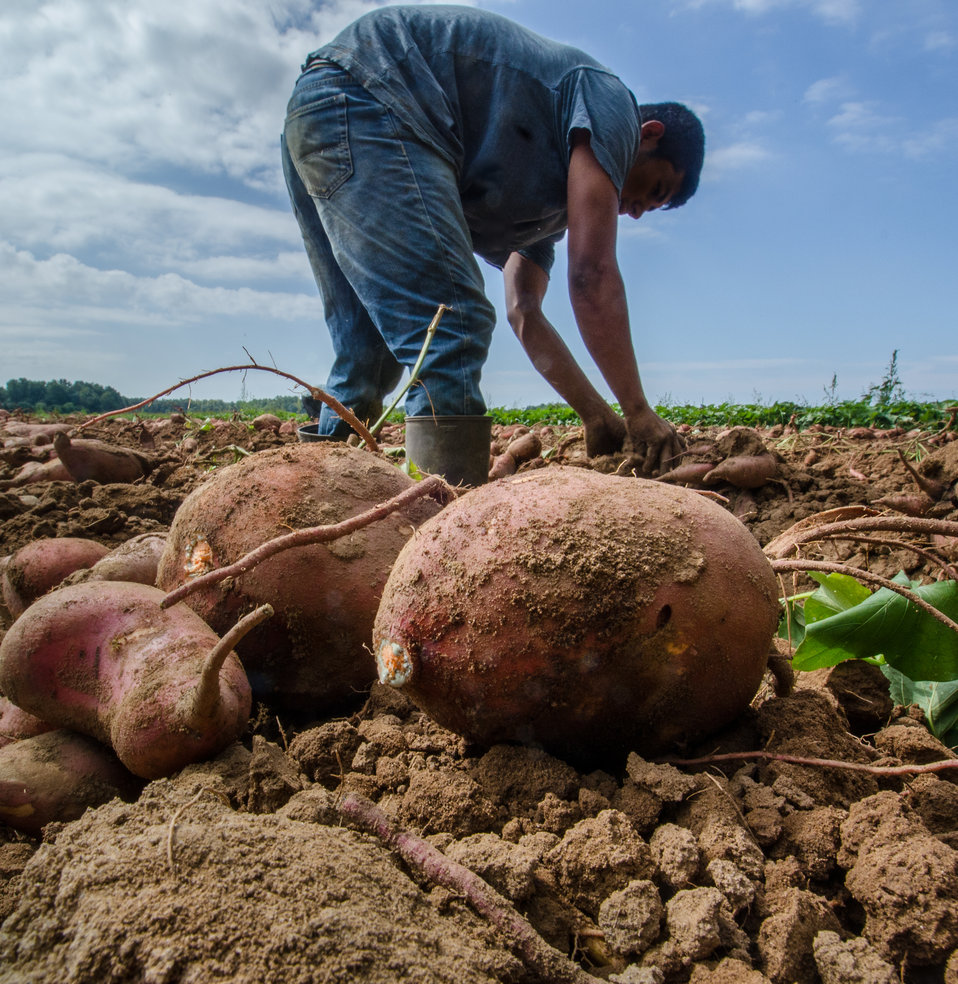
Harvested hand picked large sweet potatoes, at Kirby Farms in Mechanicsville, VA on Friday, Sept. 20, 2013. 200 acres of the farm are devoted to eggplant, spinach, beets, tomato, jalapeno peppers, melons and a variety of greens. Soybeans and small grain are grown on the remaining 300 acres. Using rotational crop practices allows Kirby Farms to double and triple crop yields. Wholesalers, who buy from this farm, sell the produce to major supermarkets in the Mid-Atlantic region, from North Carolina to Maryland. Restaurants in the local area prepare and serve the local bought produce to patrons in the Richmond, VA metropolitan area.